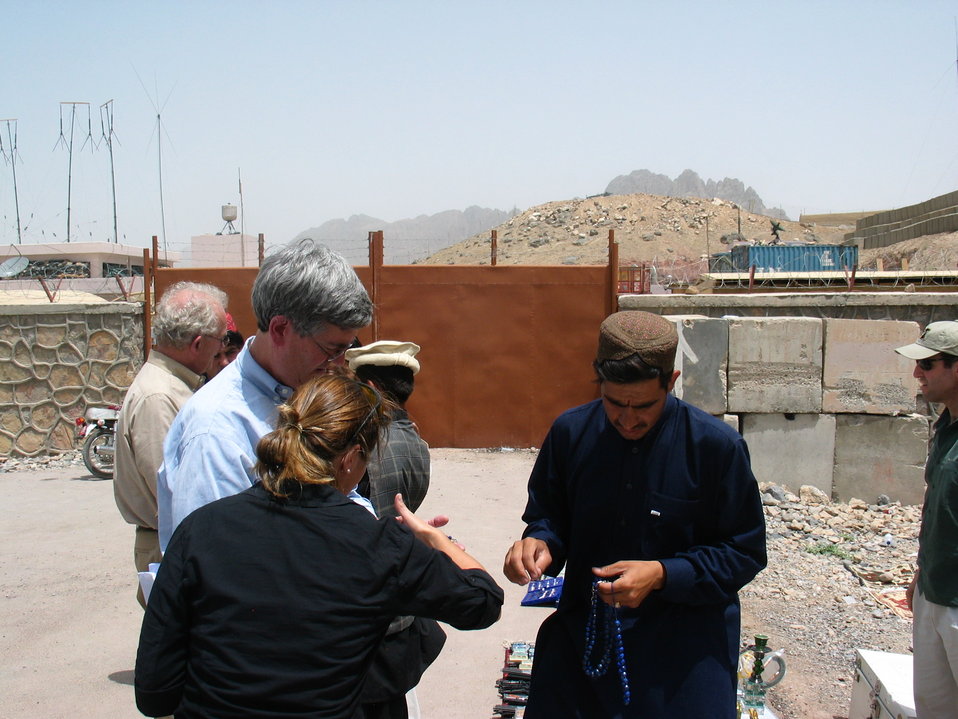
CODEL Berman